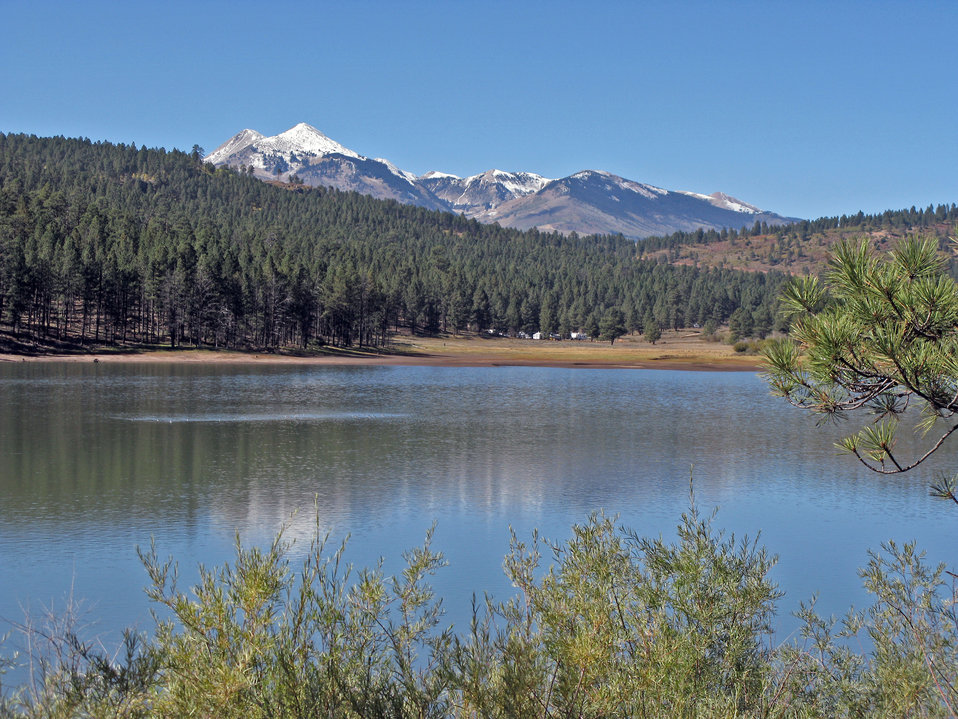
scenic

Buckeye Recreation Area on the Manti-La Sal National Forest in southwestern Colorado.